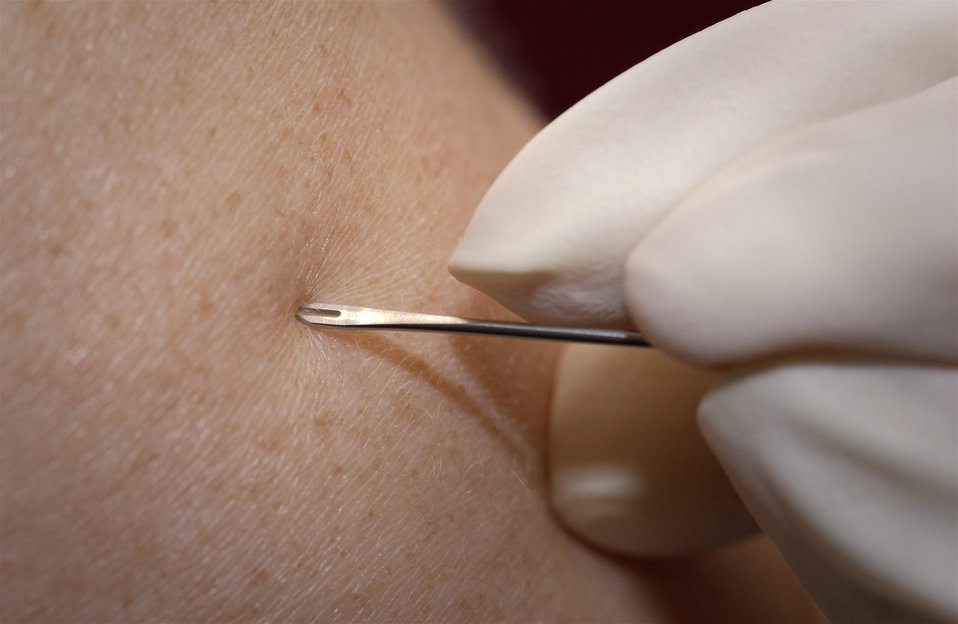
CDC Clinician demonstrates the use of a bifurcated needle during the 2002 Smallpox Vaccinator Workshop.